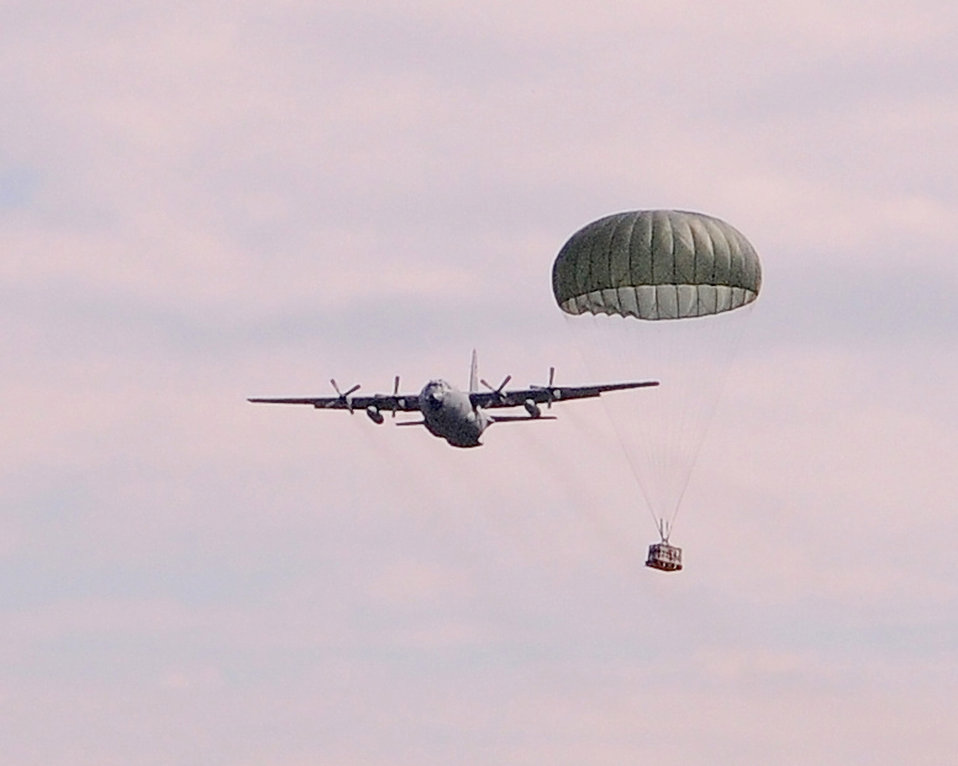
Low cost, Low altitude

A